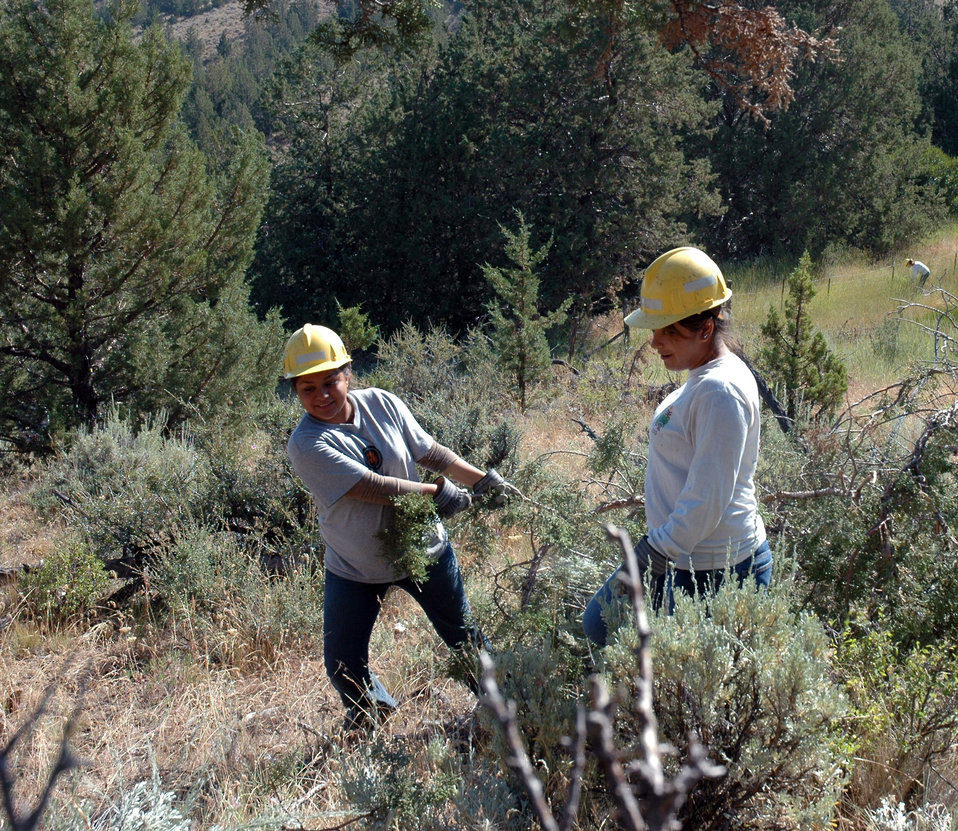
Summer Jobs R6 018

Youth Conservation Corps crewmembers use their muscle to clear juniper slash on the Crooked River National Grassland in Oregon. The U.S. Forest Service and its conservation partners hire more than 3,000 people annually for summer positions that involve work such as reducing the impacts of climate change on the nation’s natural resources, empowering Native American communities, building trails, enhancing wildlife habitat, and improving and restoring cultural and historic landmarks.